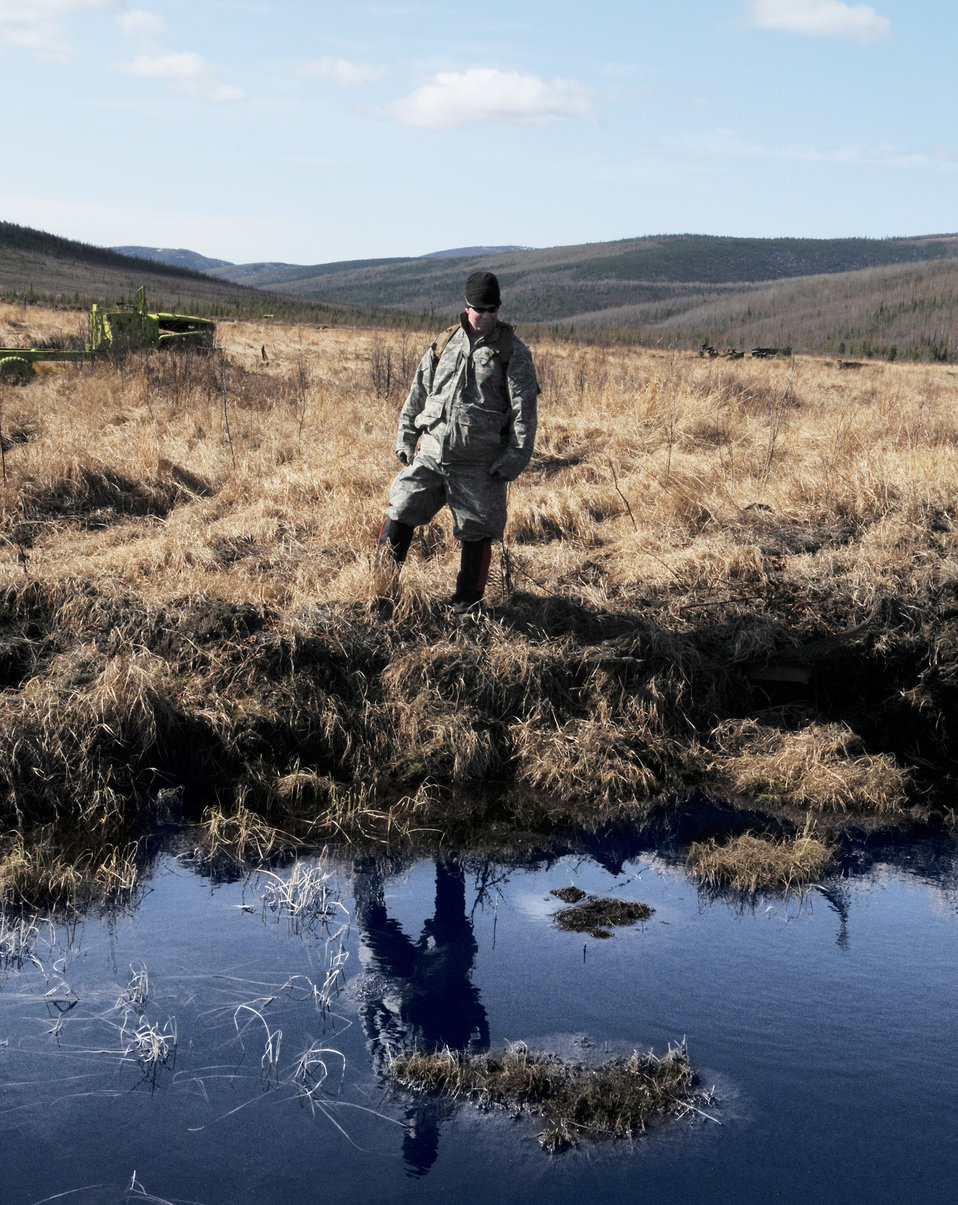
Servicemembers clear Alaskan bombing range

Senior Airman Matthew Leatherman surveys a pond for unexploded ordnance May 14 at the Pacific Alaskan Range Complex. The range is being searched for live munitions left over from Red Flag training operations which will later be disposed of. Airman Leatherman is with the 354th Civil Engineering Squadron Explosive Ordnance Flight.